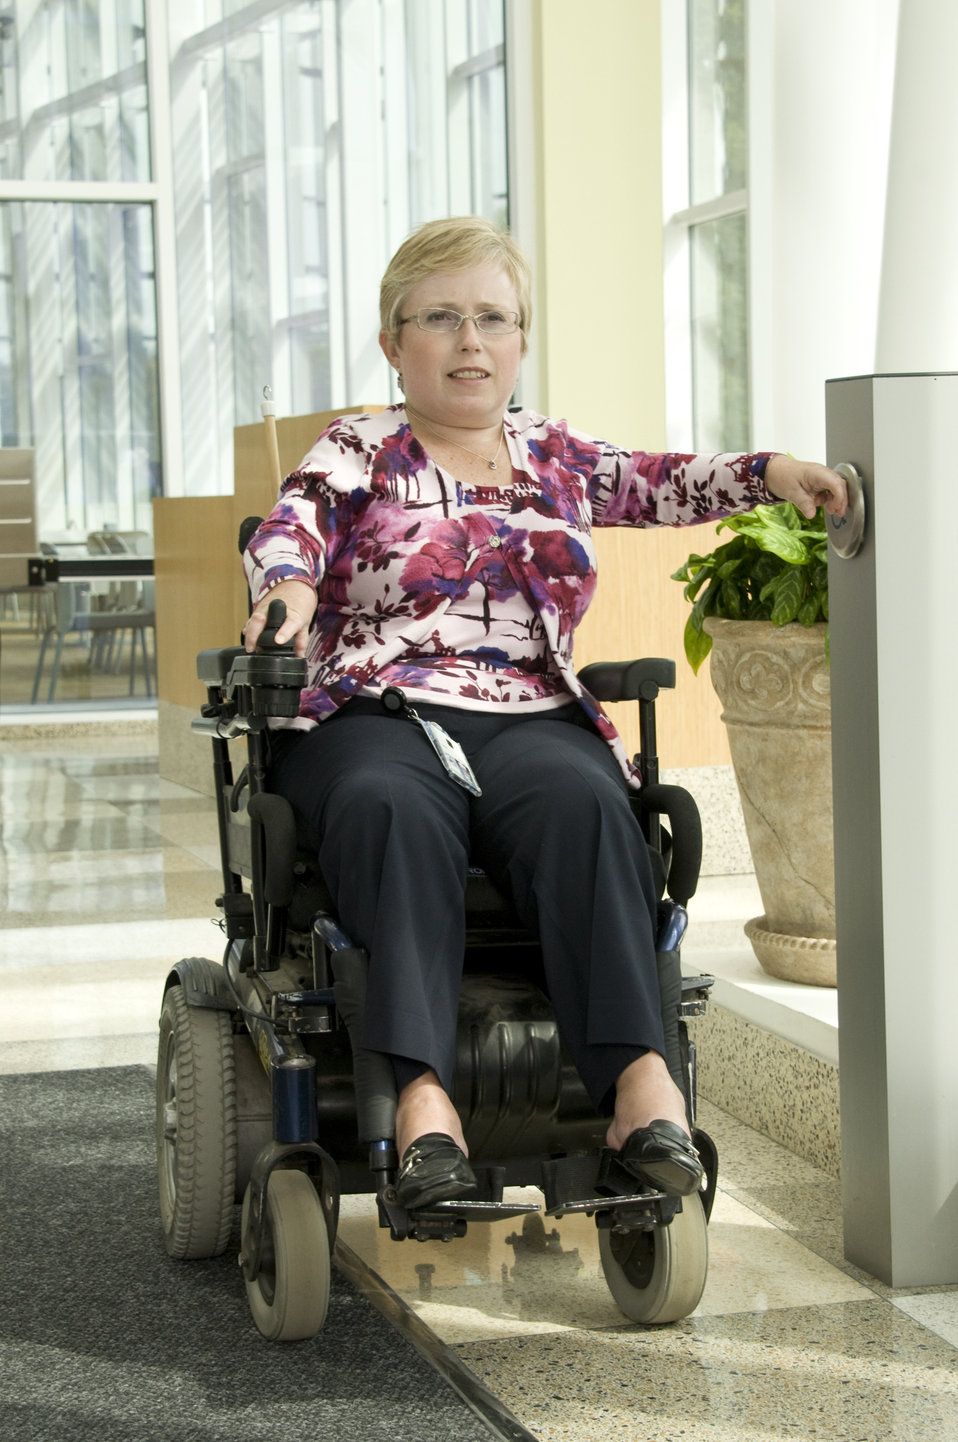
Seated in her wheelchair, the woman pictured here had completed her activities at one of the Centers for Disease Control's (CDC) campuses in Atlanta, Georgia, and was in the process of exiting a building, using her left hand to press the easily-accessible, push-button pad door opener.